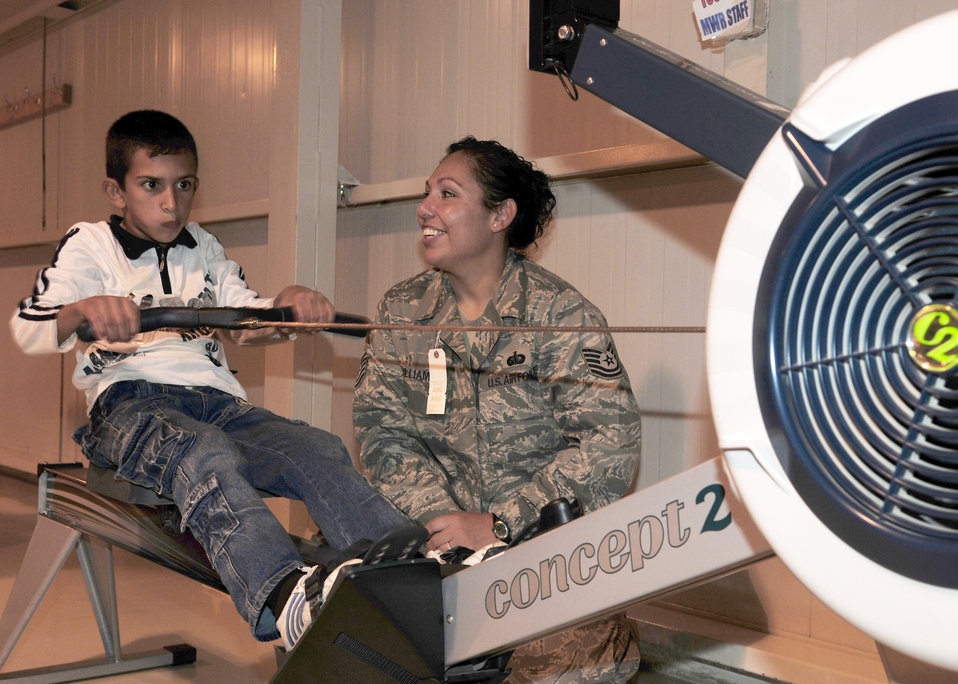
Iraqi children come out to play at Joint Base Balad

Tech. Sgt. Nichol Williams teaches an Iraqi child how to use equipment in the fitness center Oct. 10, 2009, at Joint Base Balad, Iraq. Sergeant Williams is a 332nd Air Expeditionary Wing protocol team member and deployed from McConnell Air Force Base, Kan. She is a native of Huntington Beach, Calif.